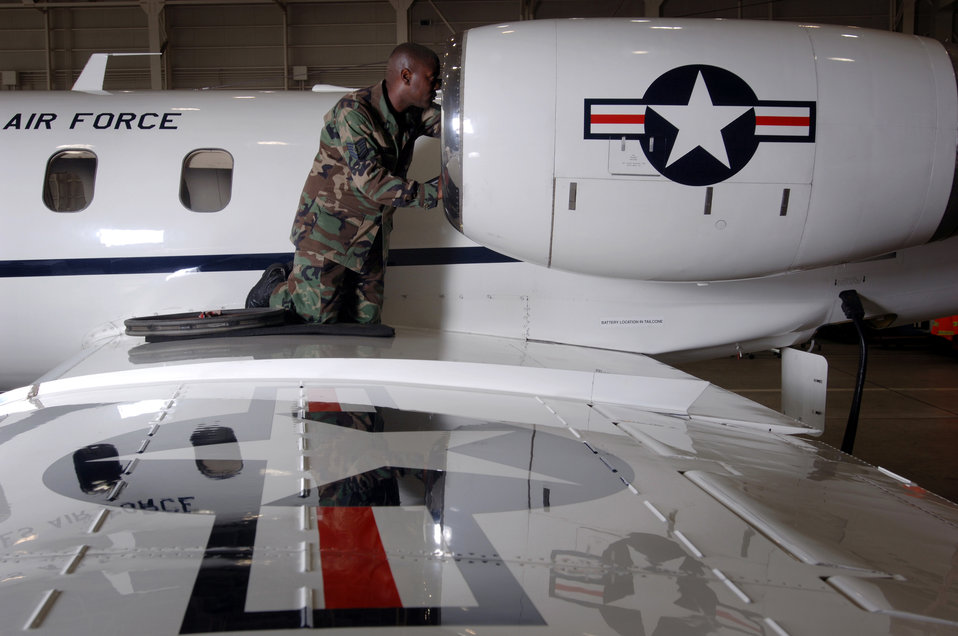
Quality check

YOKOTA AIR BASE, Japan -- Tech. Sgt. Eric Wilson inspects an engine on a C-21 aircraft during a quality assurance inspection. Sergeant Wilson is assigned to the 374th Maintenance Operations Squadron.